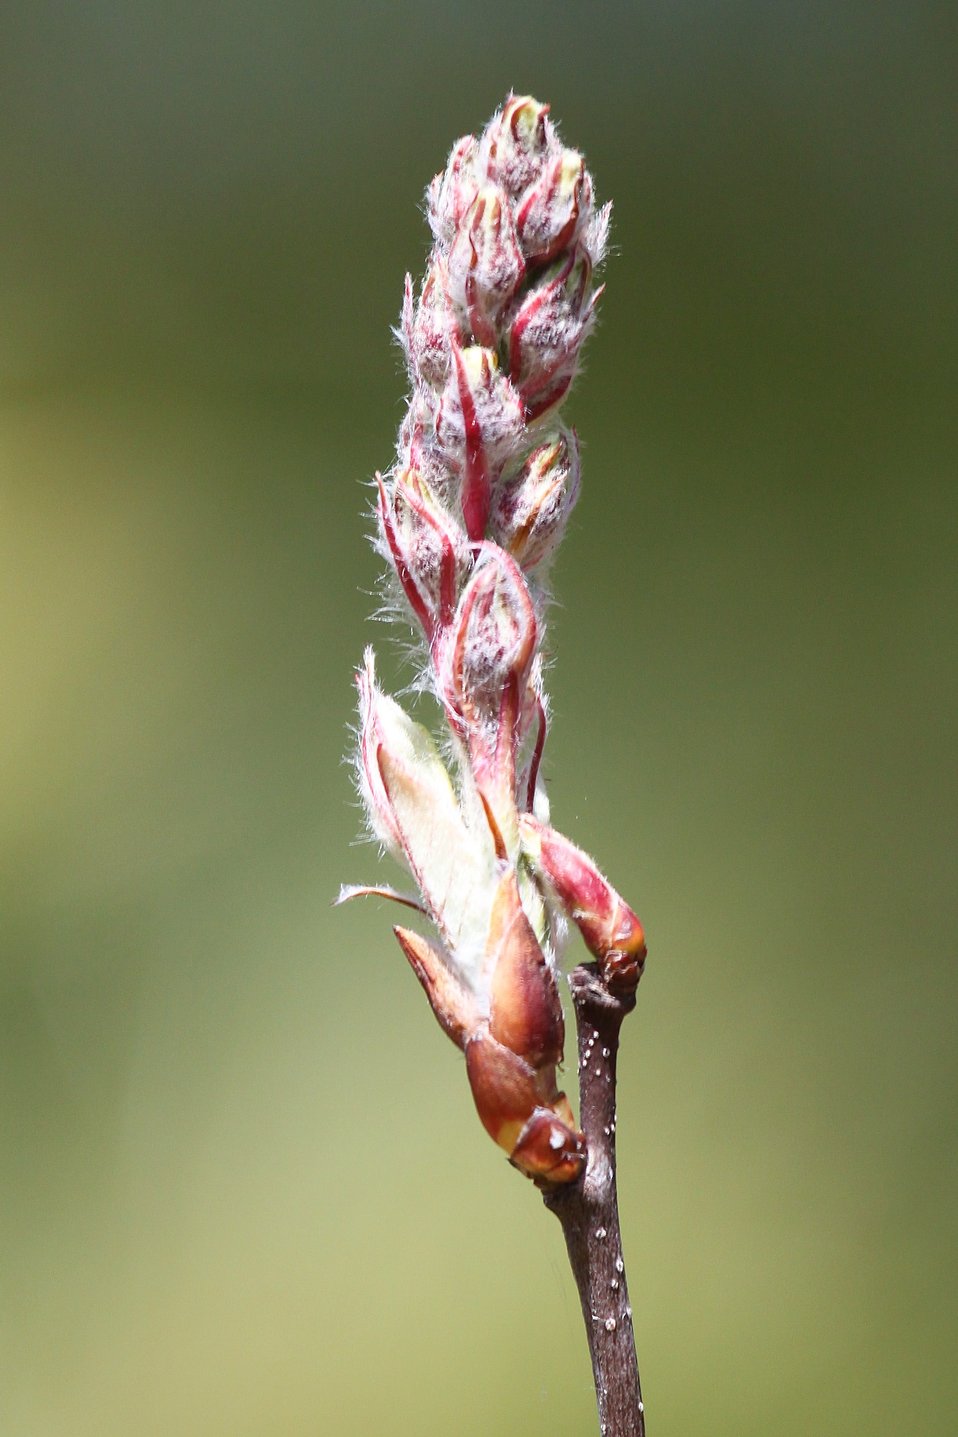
Serviceberry breaking bud at Missisquoi National Wildlife Refuge.